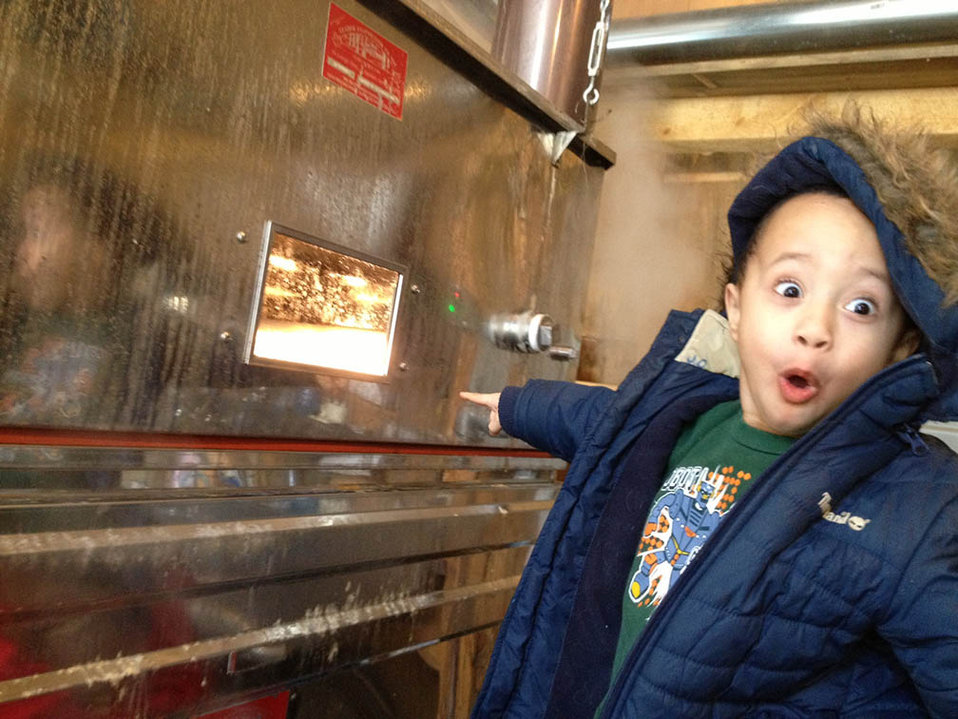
Maple-1

A youngster enjoying how maple syrup is made.